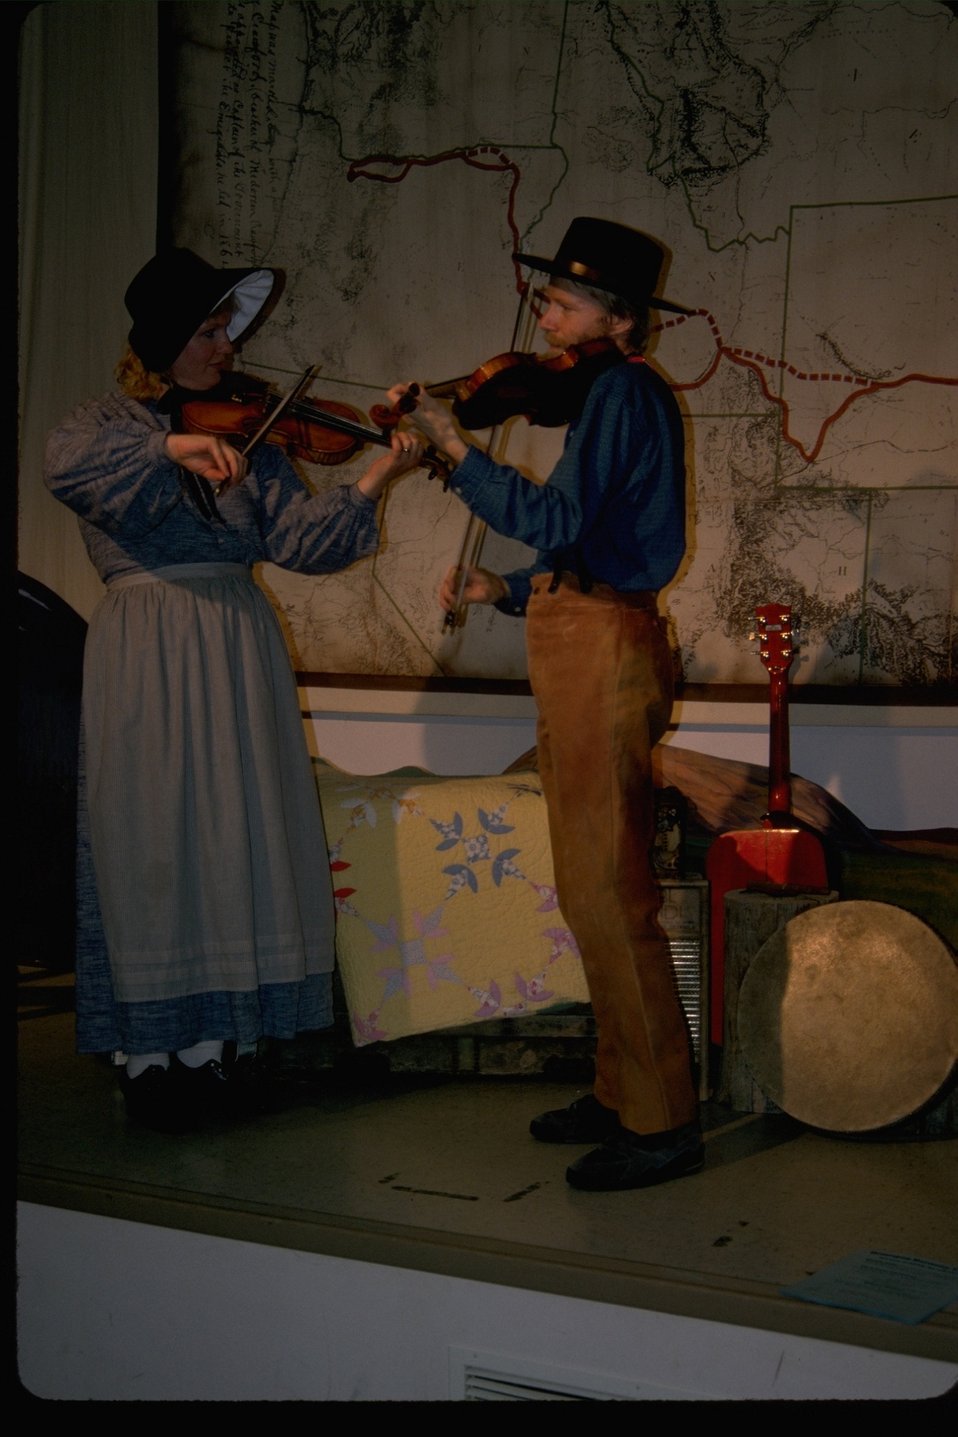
Theater performance --mixed blessings-- at the NHOTIC.